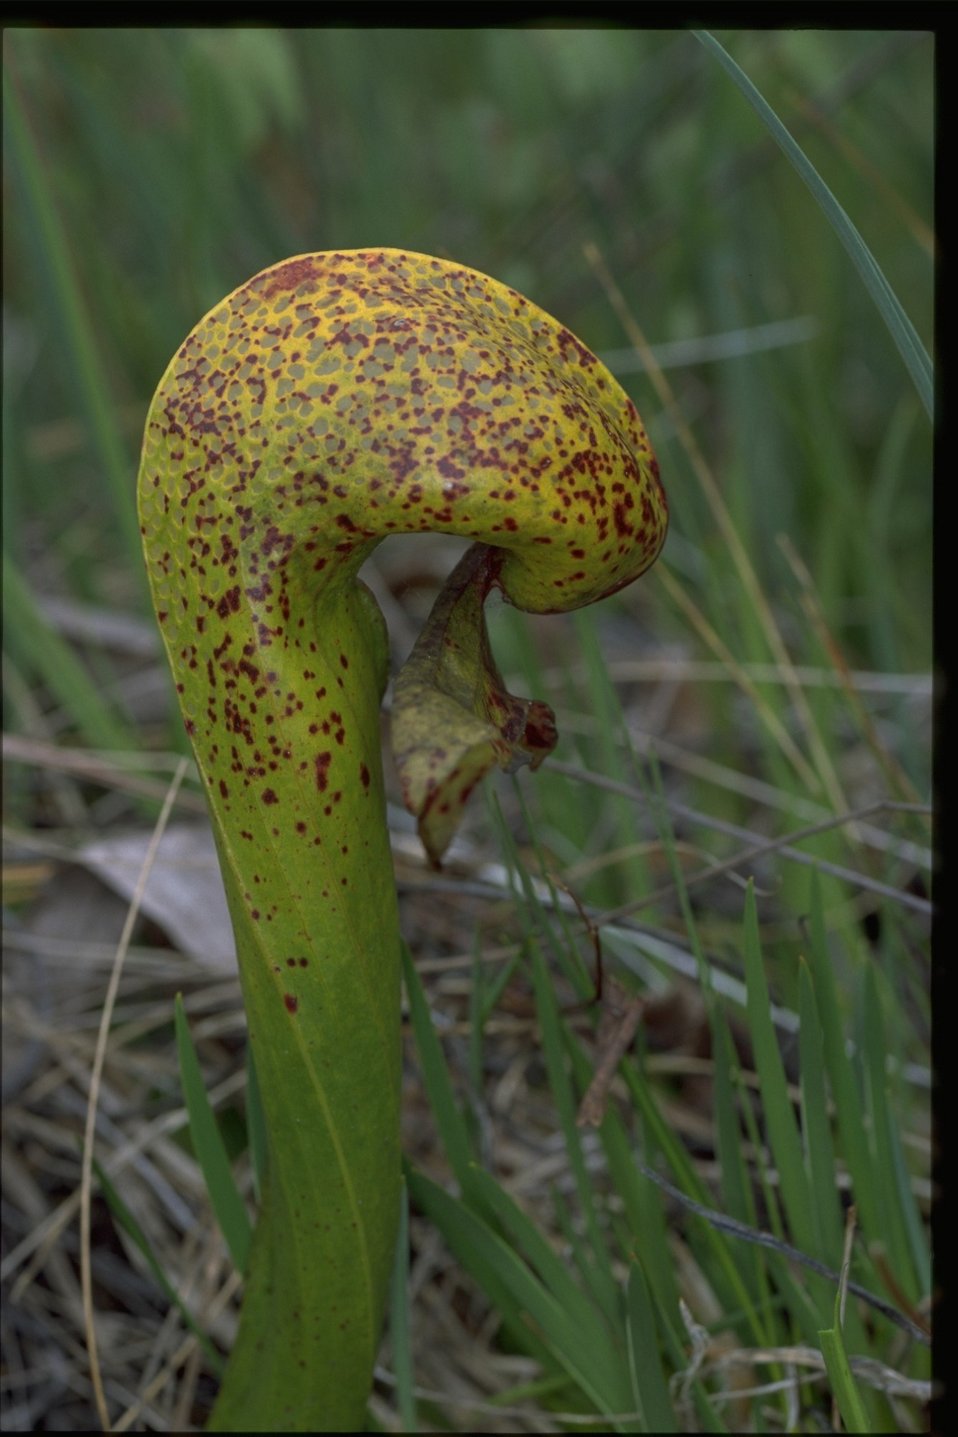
Medium shot of Cobra Lily, Darlingtonia californica.